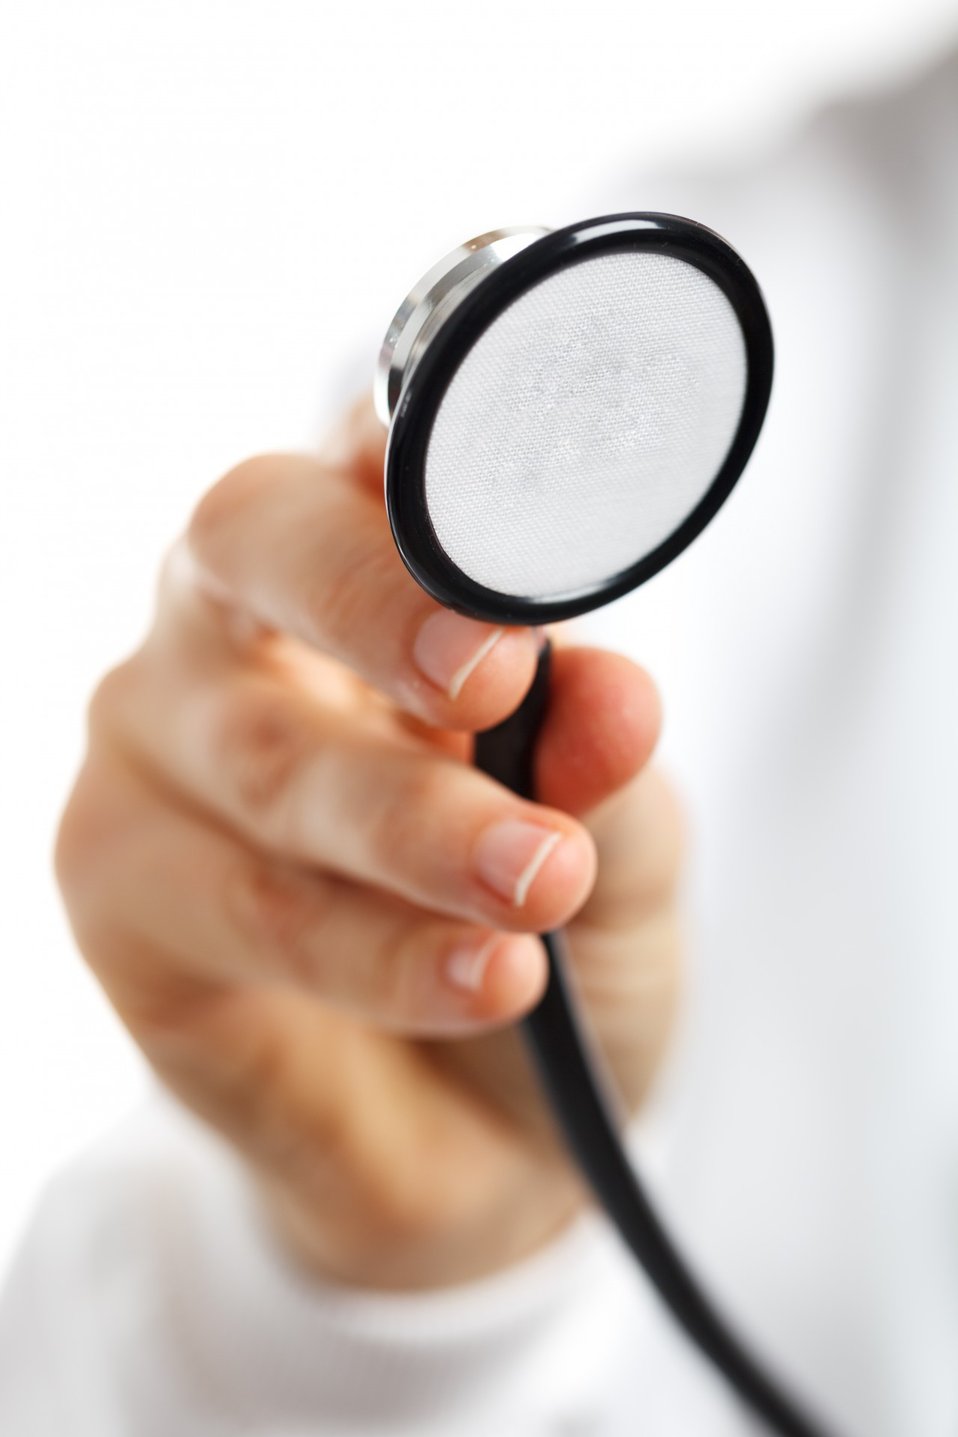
Hand holding a stethoscope on white background.